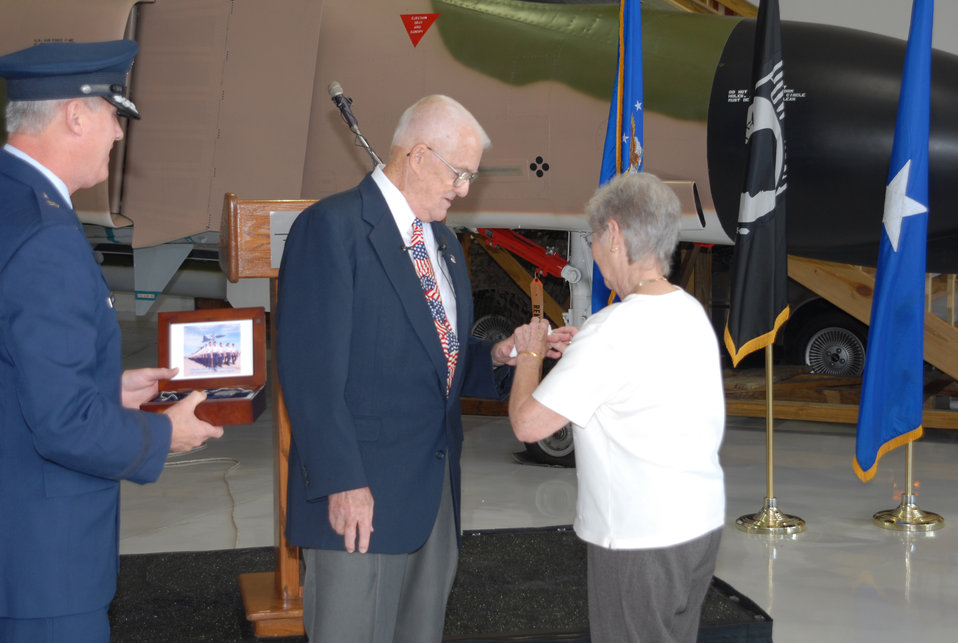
Ring is returned

Phyllis Hivner places the original wedding band on the left ring finger of retired Col. James Hivner Nov. 11, 2009, at the Cavanaugh Flight Museum in Addison, Texas. It was the first time the colonel had seen, or worn, the ring since Oct. 5, 1965, when he was shot down and captured in North Vietnam and the ring was taken. The colonel's ring was found recently and eventually passed to retired Navy Cmdr. Rick Tolley who searched for its owner until he found Colonel Hivner.